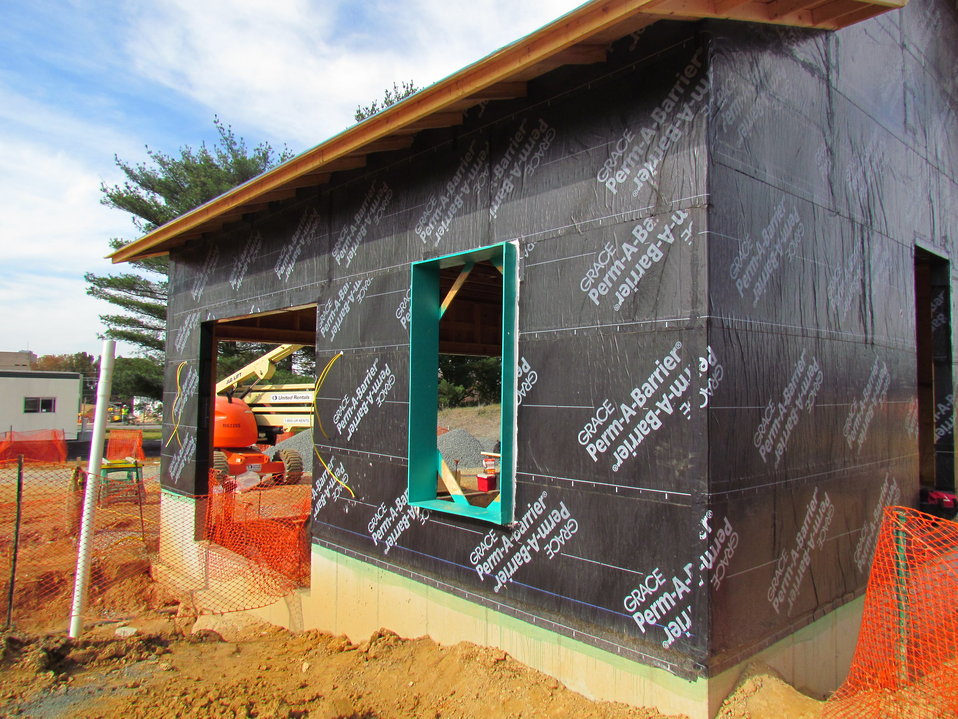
Net-Zero Energy Residential Test Facility - Photo showing detached garage with air/moisture barrier installed.